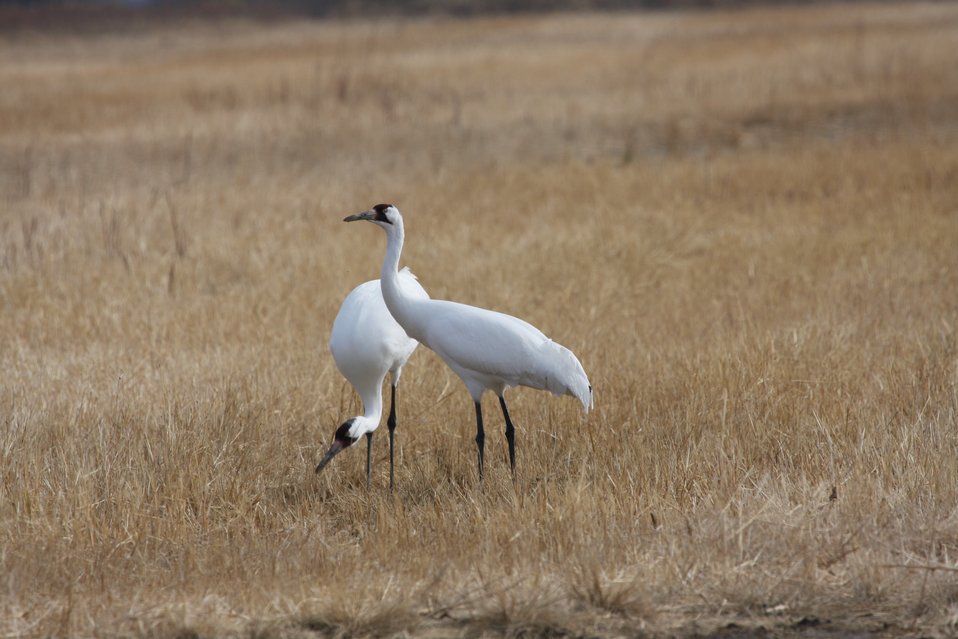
Whooping Cranes at Quivira National Wildilfe Refuge

This pair of adult whooping cranes was observed for several days on a grain field at Quivira National Wildlife Refuge in Kansas.